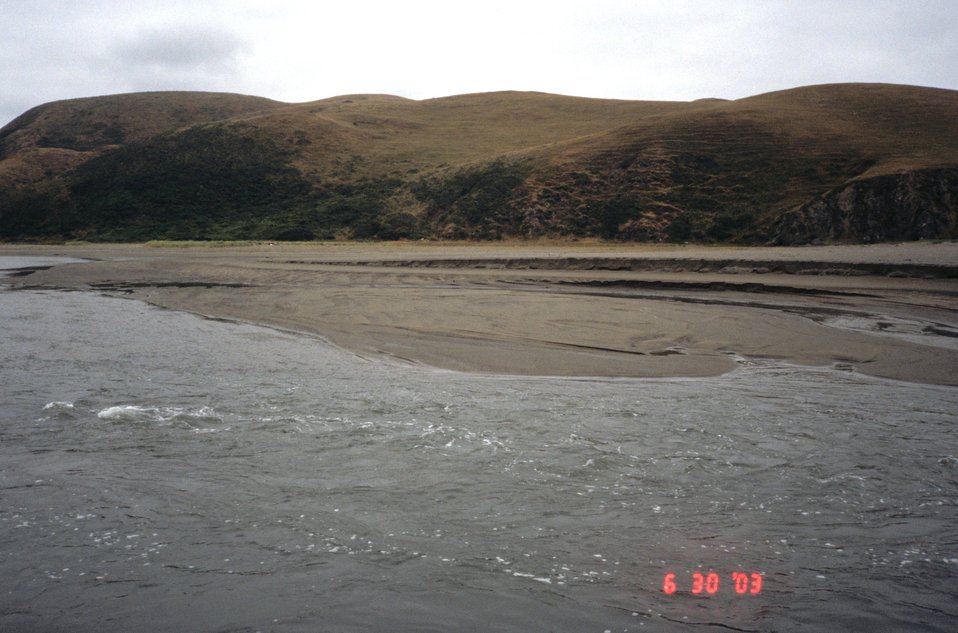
Pinnacle Gulch Beach